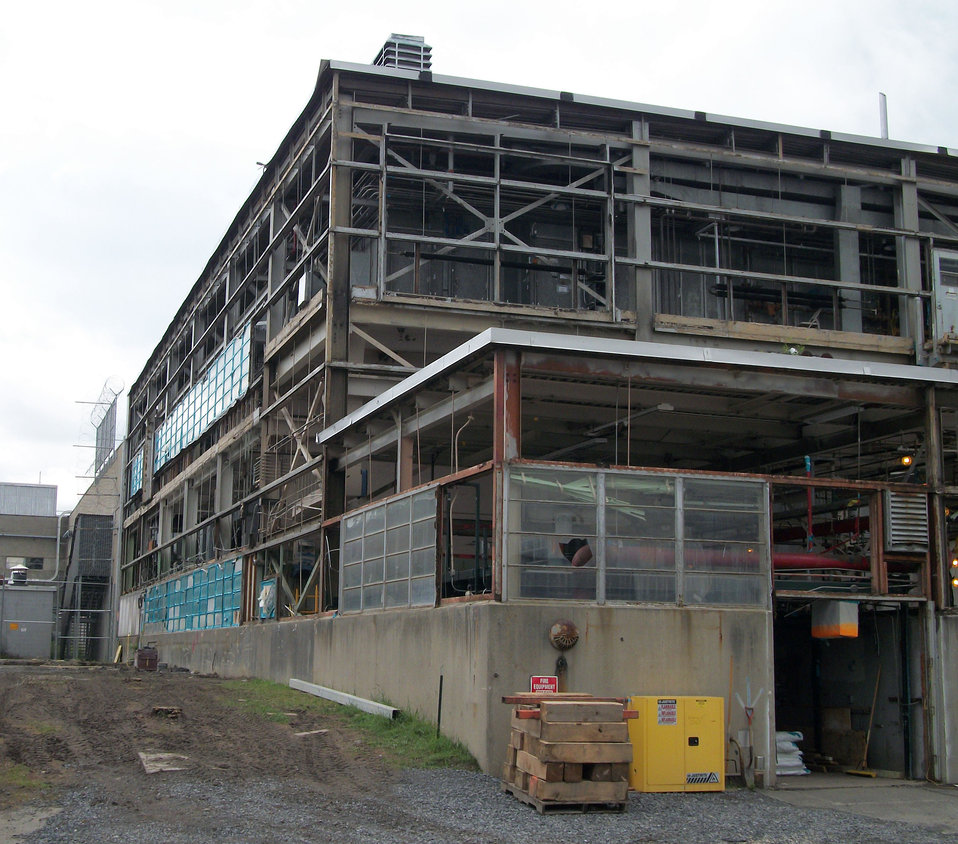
Recovery Act Keeps SPRU on Track for Closure in 2011

The G2 Building, which housed laboratories, hot cells, separations process testing equipment, and a tunnel system.